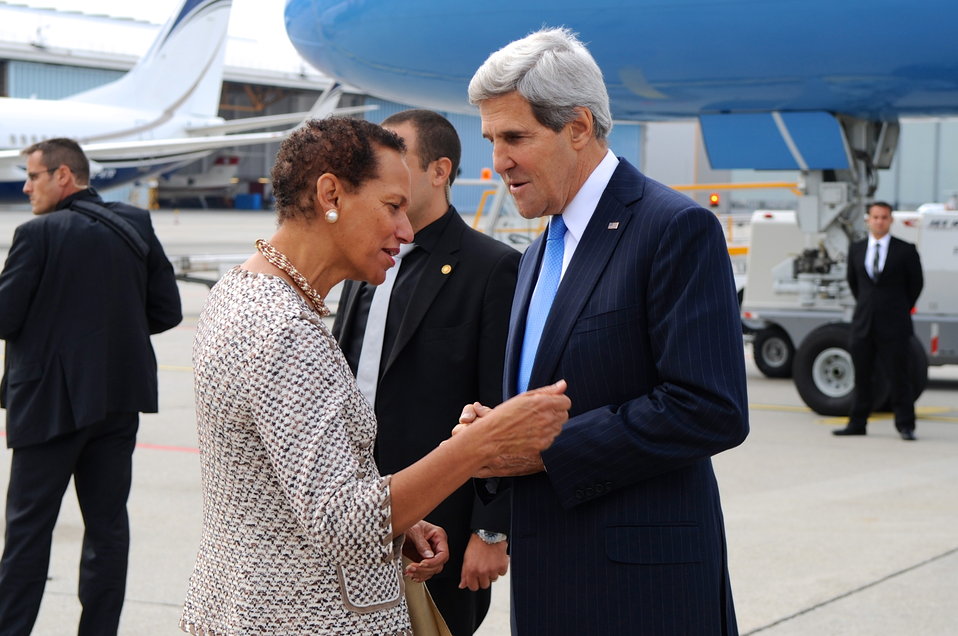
Secretary Kerry Speaks with UN Permanent Representative in Geneva

U.S. Secretary of State John Kerry chats with Betty E. King, the U.S. Permanent Representative to the United Nations in Geneva, Switzerland, after his arrival in Geneva for talks with Russian Foreign Minister Sergey Lavrov regarding the disposition of Syrian chemical weapons stocks on Sept. 12, 2013.